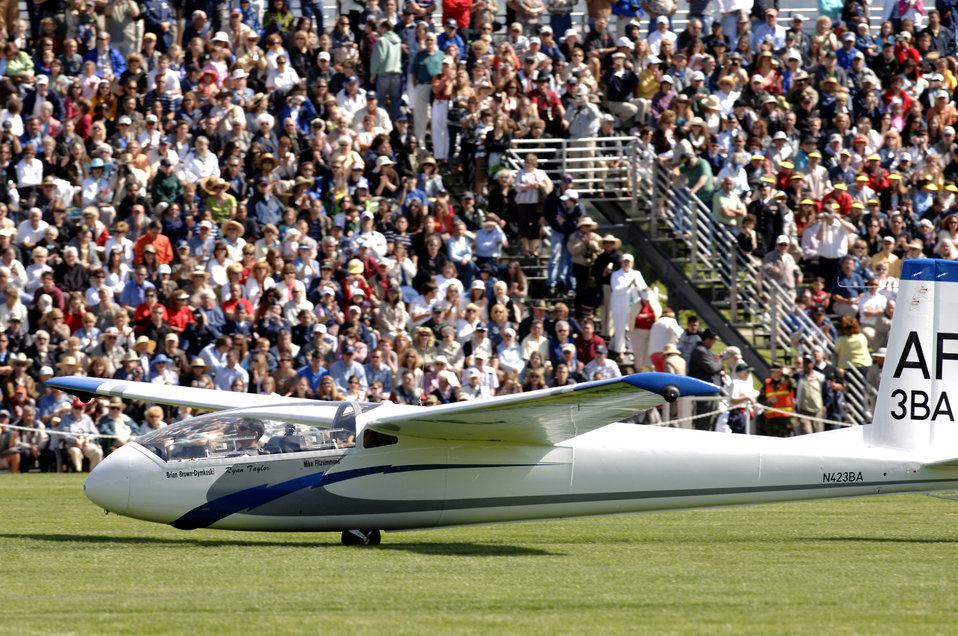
Parade preps Class of 2007 for graduation

An academy glider lands on the Stillman Parade Field during the 2007 Graduation Parade May 29 at the U.S. Air Force Academy in Colorado. The graduation for the U.S. Air Force Academy's Class of 2007 will be held 10 a.m. May 30 at Falcon Stadium. Secretary of Defense Dr. Robert M. Gates will be the guest speaker.